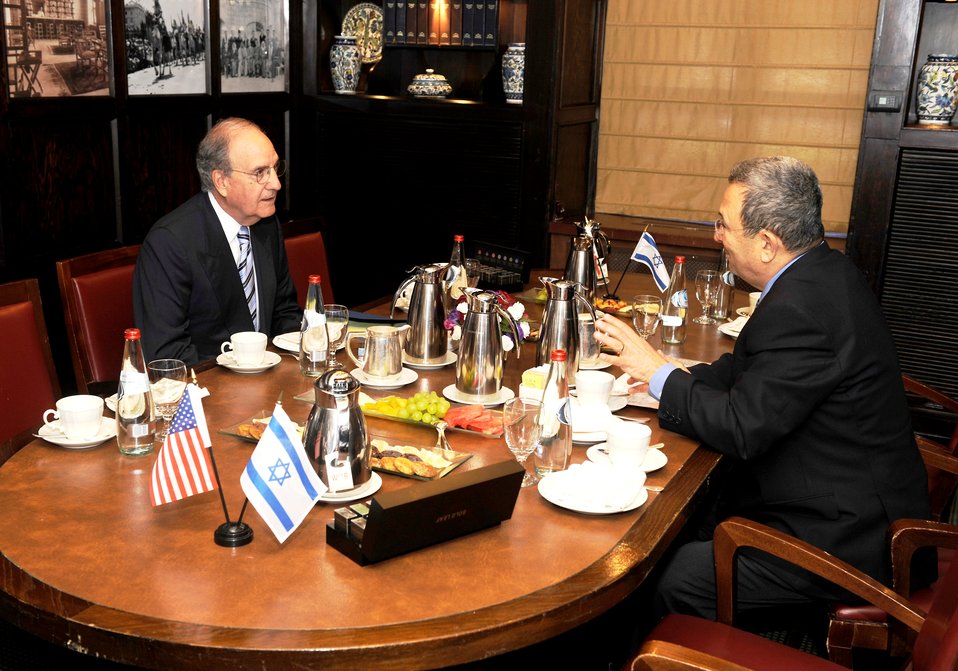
Israeli Defense Minister Barak and Special Envoy Mitchell Meet

Israeli Defense Minister Ehud Barak and U.S. Special Envoy for Middle East Peace George Mitchell meet at the King David Hotel in Jerusalem on June 17, 2010.